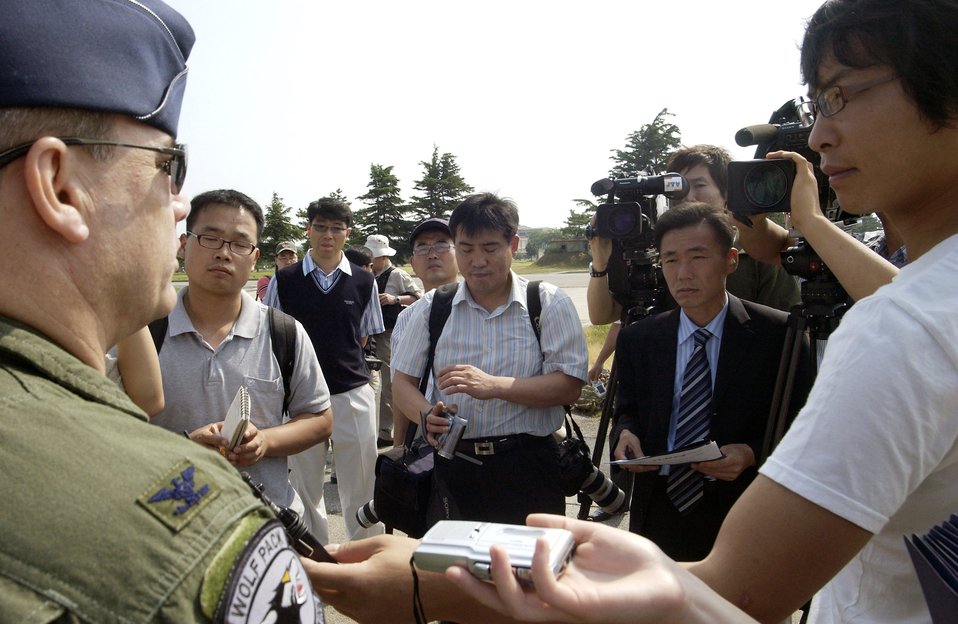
USAFE fighter squadron deploys to Kunsan

Col. Preston Thompson speaks to Korean media members regarding the arrival of F-16 Fighting Falcons from the 555th Fighter Squadron from Aviano Air Base, Italy, to Kunsan Air Base, South Korea. This is the first time a U.S. Air Forces in Europe fighter unit has deployed to a Pacific Air Force base. Colonel Thompson is the 8th Fighter Wing vice commander.